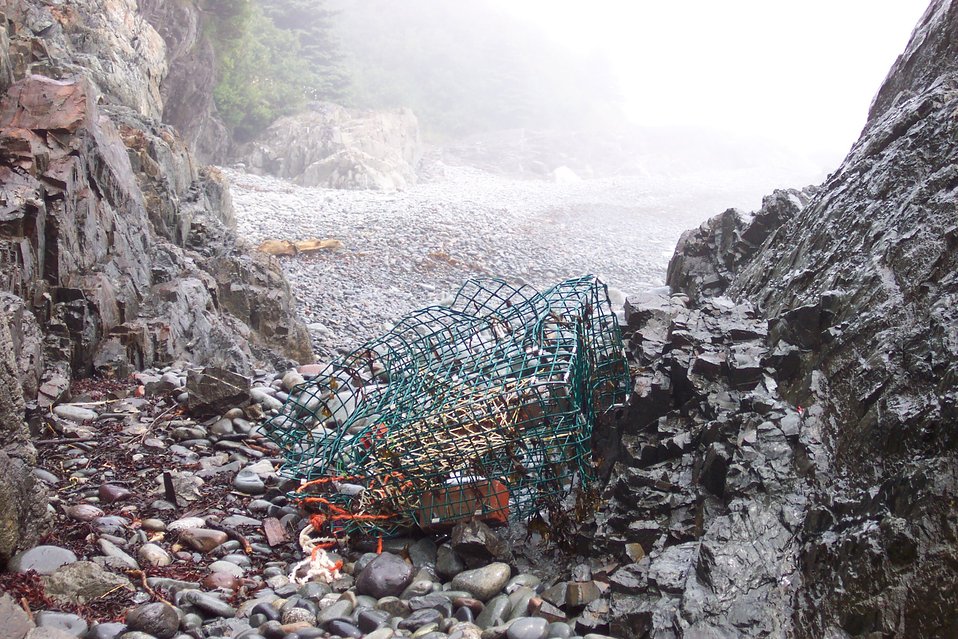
A lobster pot left by the waves at West Quoddy Head.